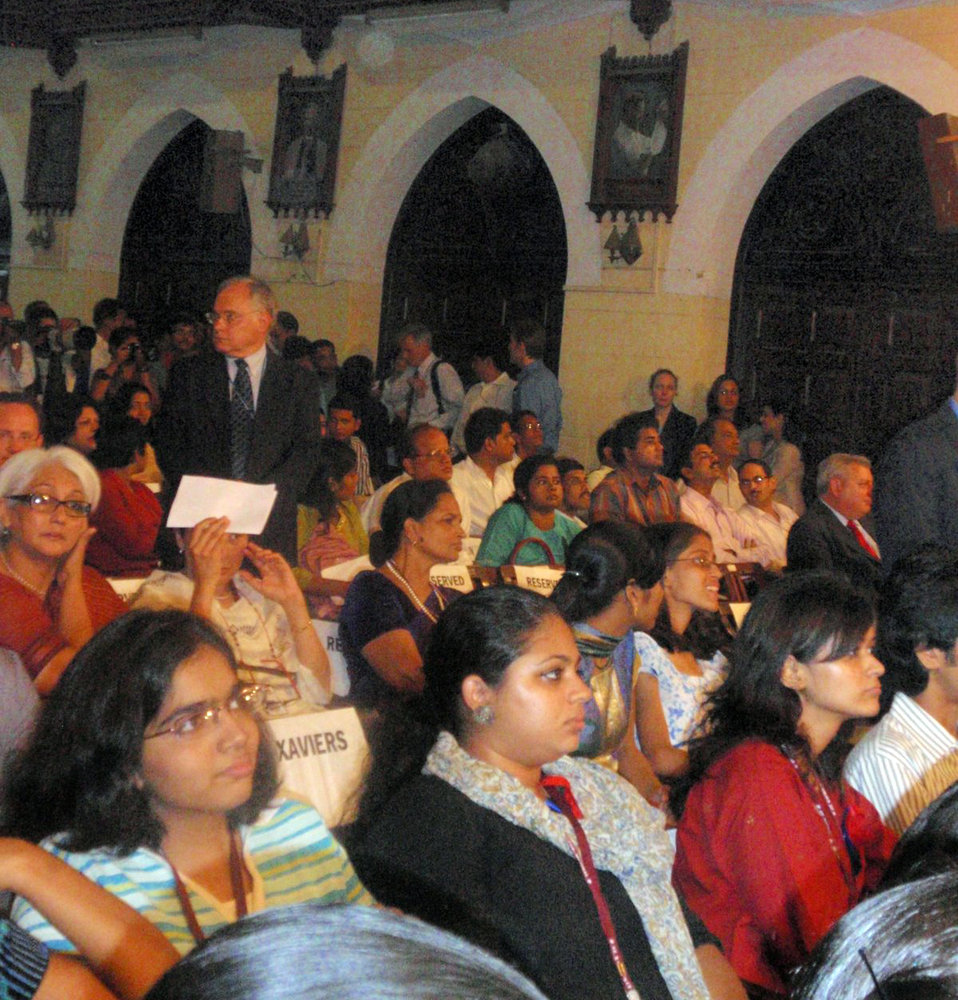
Behind the Scenes: Education and Service Town Hall Meeting

The audience gathers for a town hall meeting discussing education and service with U.S. Secretary of State Hillary Rodham Clinton in Mumbai India July 18, 2009. Much of the audience were 'Teach India' volunteers.